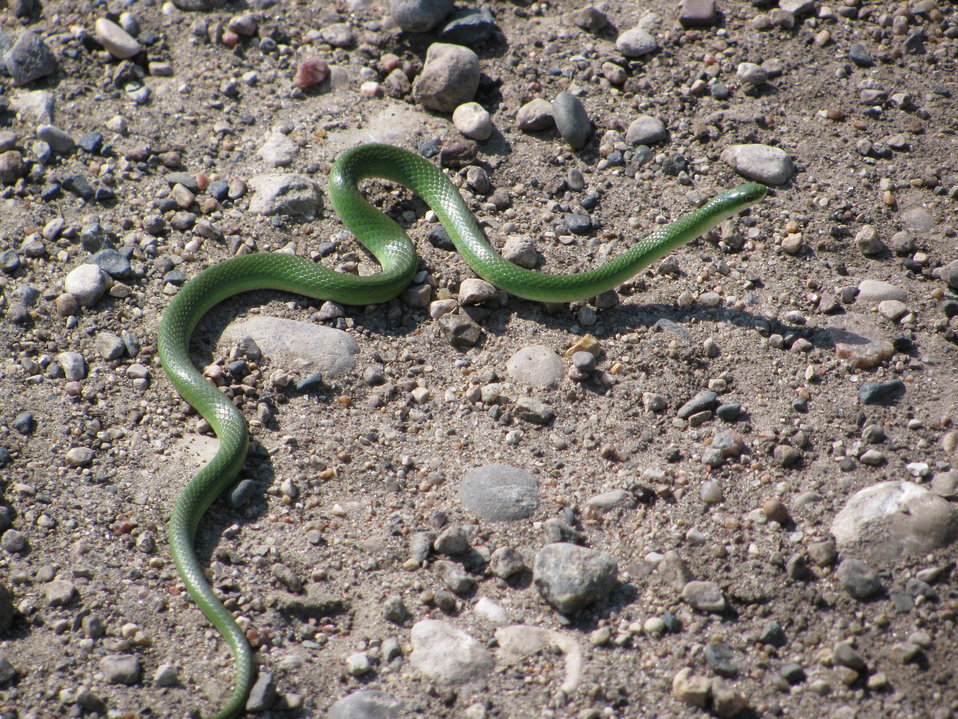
Smooth Green Snake

Smooth green snakes are native to the area, but are rarely seen because of their small size and camouflage. This one didn't blend in so well on the gravel at Wentz WPA.